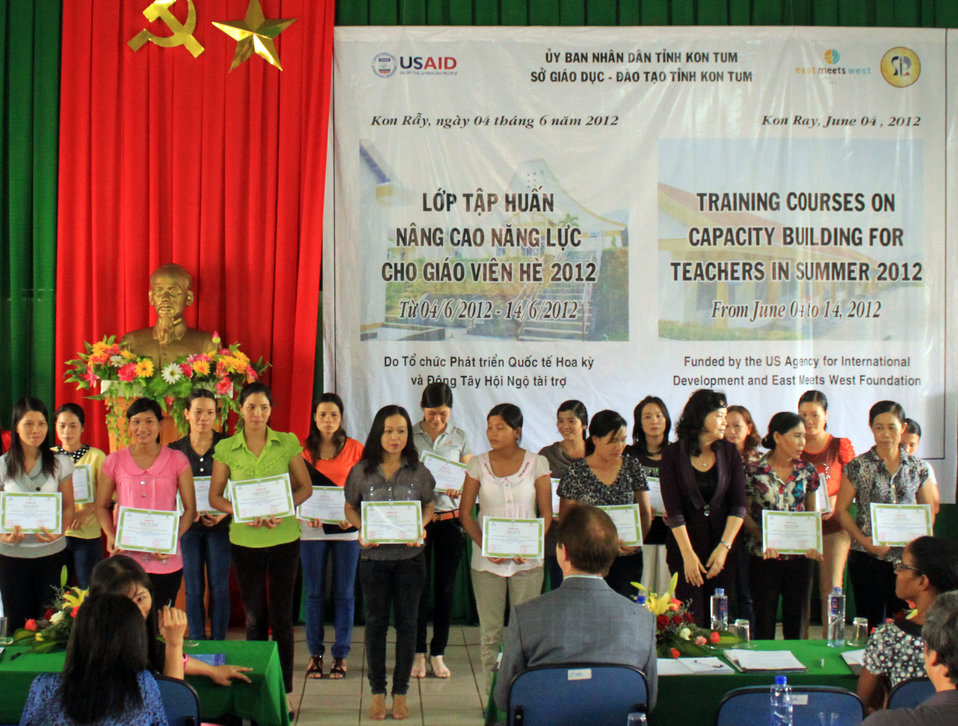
Teachers in Kon Tum receives certificates in recognition of their improved skills in art, linguistics, mathematics, nutrition and developing teaching materials